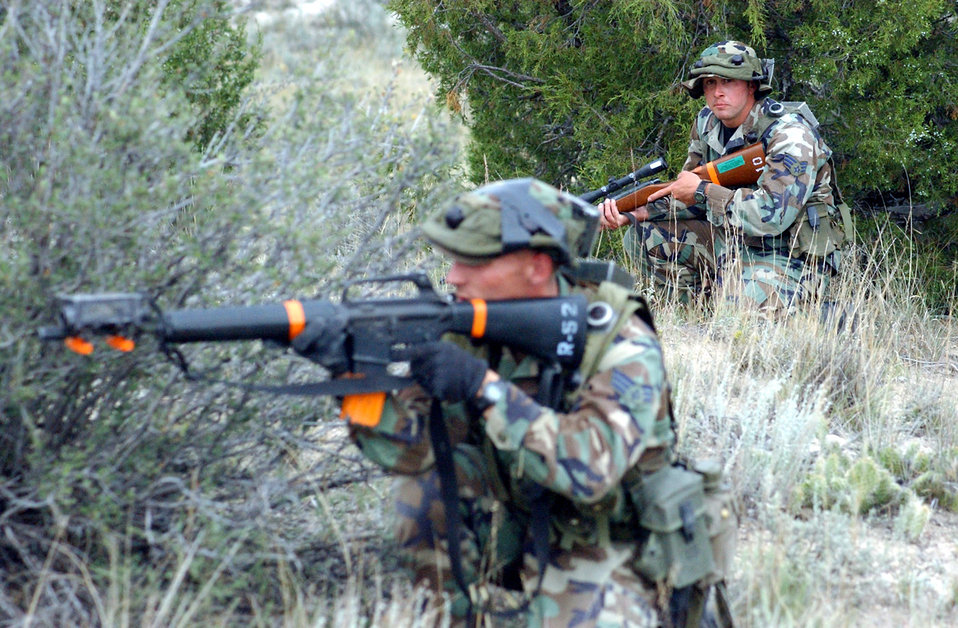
Road Warrior III reinforces continuous training

CAMP GUERNSEY, Wyo. -- Senior Airman Matthew James (left) returns fire as Senior Airman Landon Elledge watches his back during the Road Warrior III exercise here. They are assigned to the 791st Missile Security Forces Squadron at Minot Air Force Base, N.D.